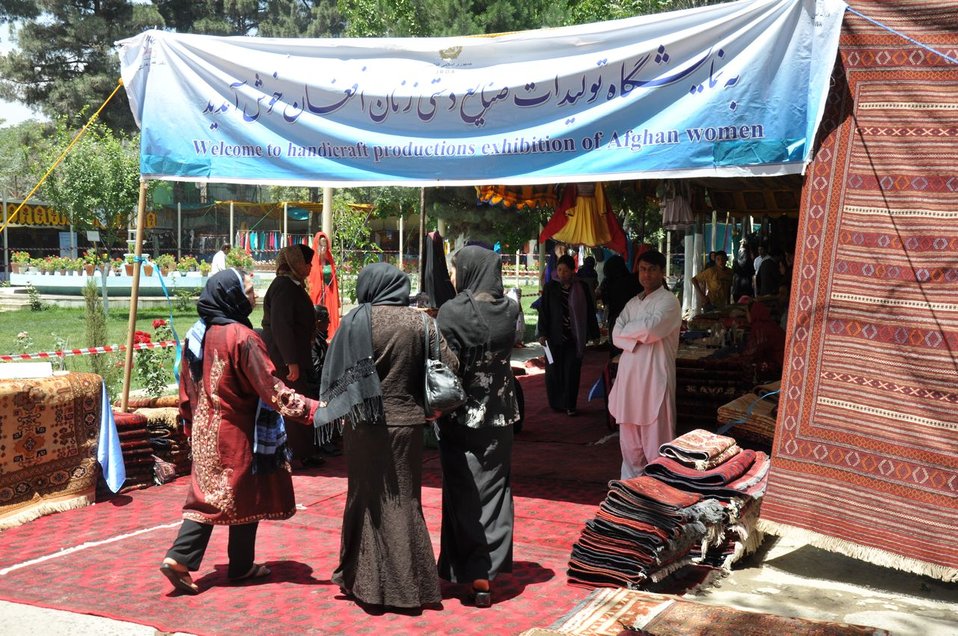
Mother's Day in Afghanistan

Many women turned up to shop the bazaar